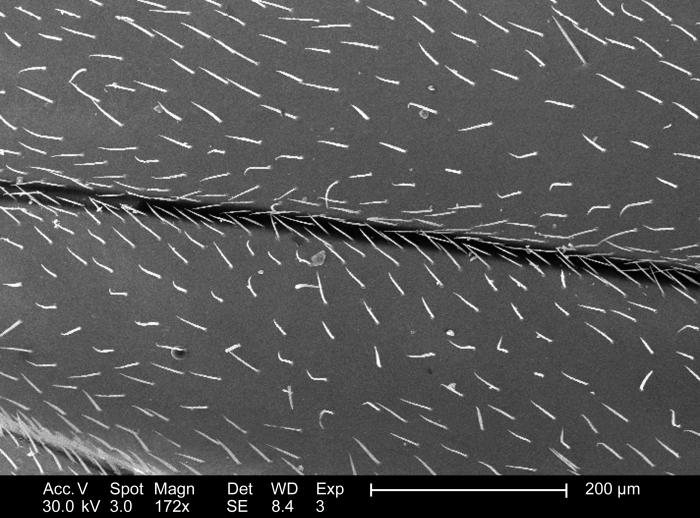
This scanning electron micrograph (SEM) depicted the magnified surface of a Western honeybee's, Apis mellifera, wing, revealing the small setae, or sensorial hairs invisible to the unaided eye. These setae detect changes in wind speed and direction, as well as thermal differences in the bee's environment, Magnified 172x.